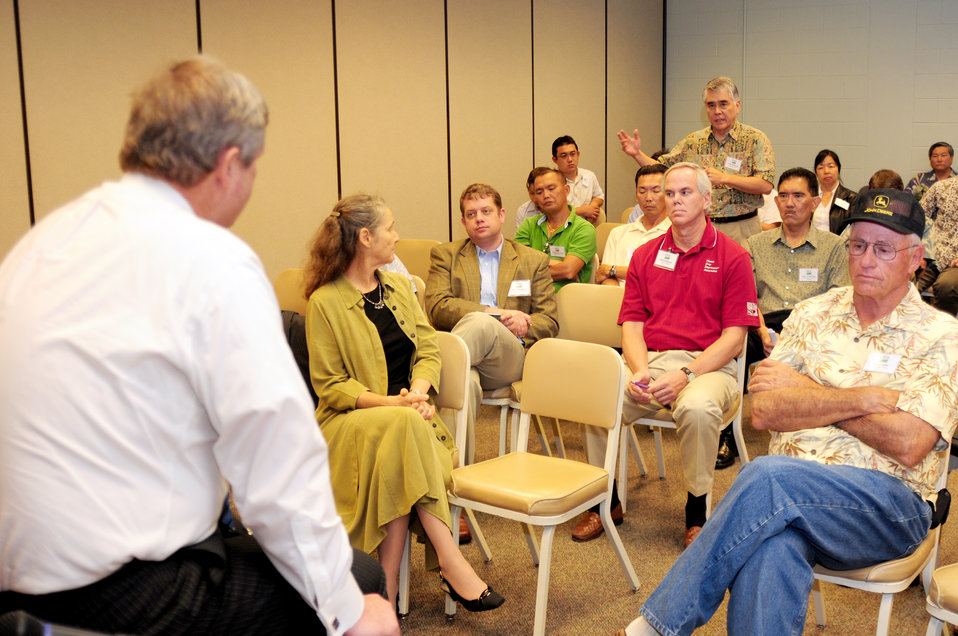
Agriculture Secretary Tom Vilsack takes a question to discuss USDA programs, agricultural challenges in Hawaii, and alternative energy, from Andy Hashimoto of the University of Hawaii at a stakeholder meeting held at the State of Hawaii Department of Agriculture Plant Quarantine Building, In Honolulu, Hawaii, on Tuesday, January 10, 2012.